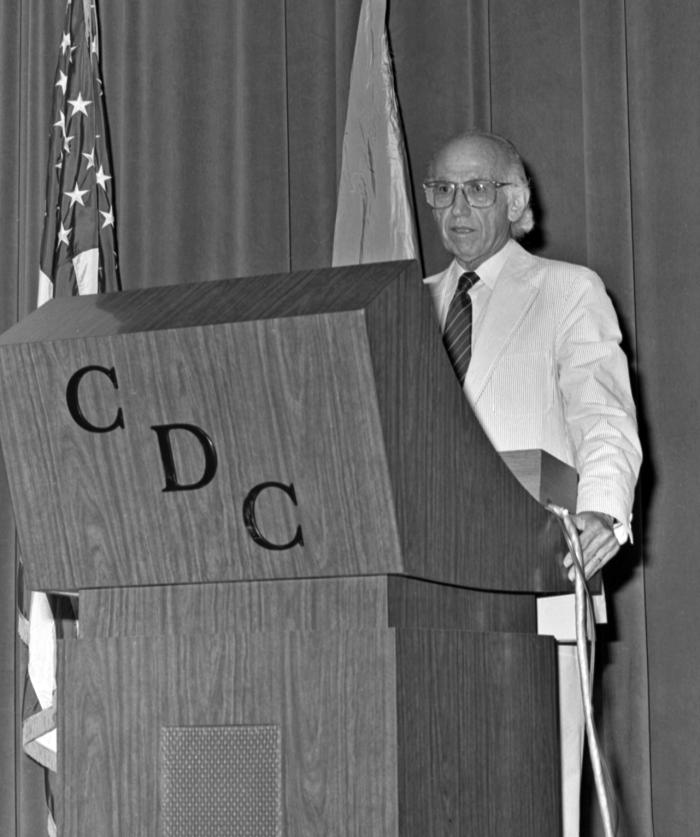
Standing at the podium during his 1988 Centers for Disease Control visit, this photograph showed Dr. Jonas Salk, creator of the first polio vaccine in 1955, fielding questions during his presentation.